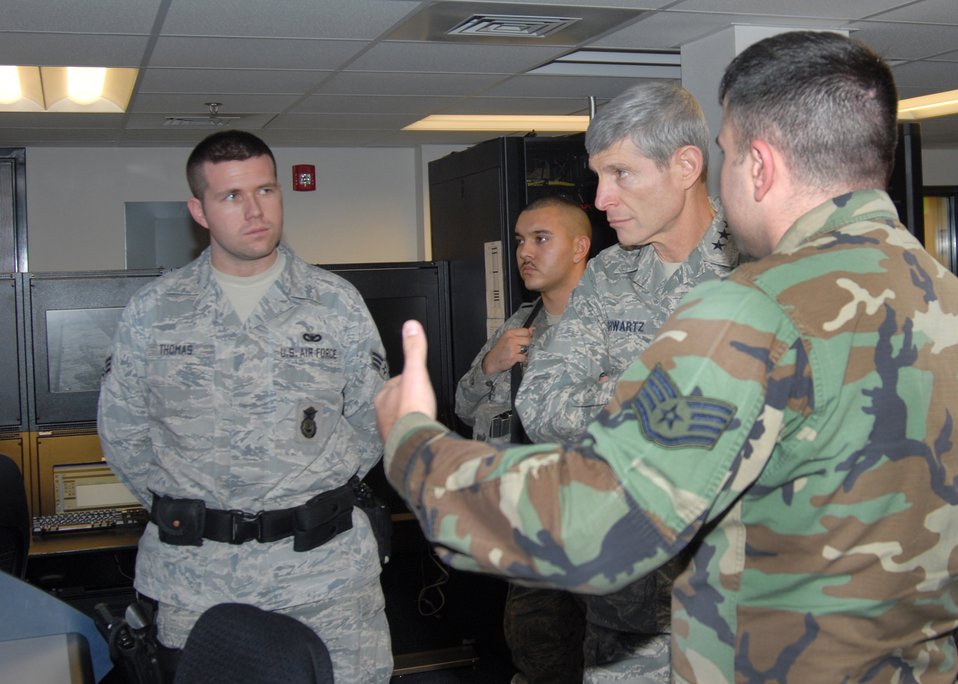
CSAF visit

Staff Sgt. Dustin Burroughs (right) along with Senior Airmen Joshua Thomas and Guderto Adame, all with the 90th Security Forces Group at F.E. Warren Air Force Base, Wyo., brief Air Force Chief of Staff Gen. Norton Schwartz Dec. 24, 2009, about the base's Transportation Control Center. The general and Mrs. Schwartz visited the base during Christmas to thank Airmen in 24-hour work centers and to reinforce the Air Force's commitment to the nuclear enterprise.